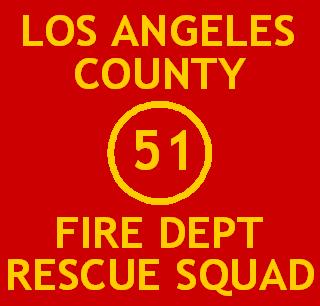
Example of door markings on an LA County Rescue Squad circa 1972 as seen on the television show 'Emergency!'